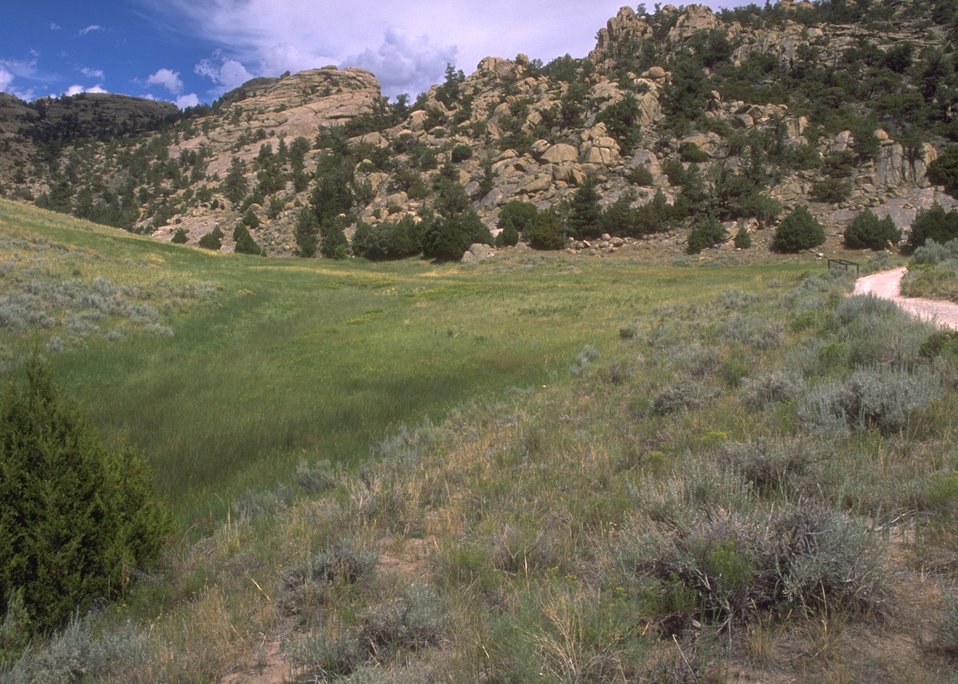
Martin's Cove area, Rawlins Field Office